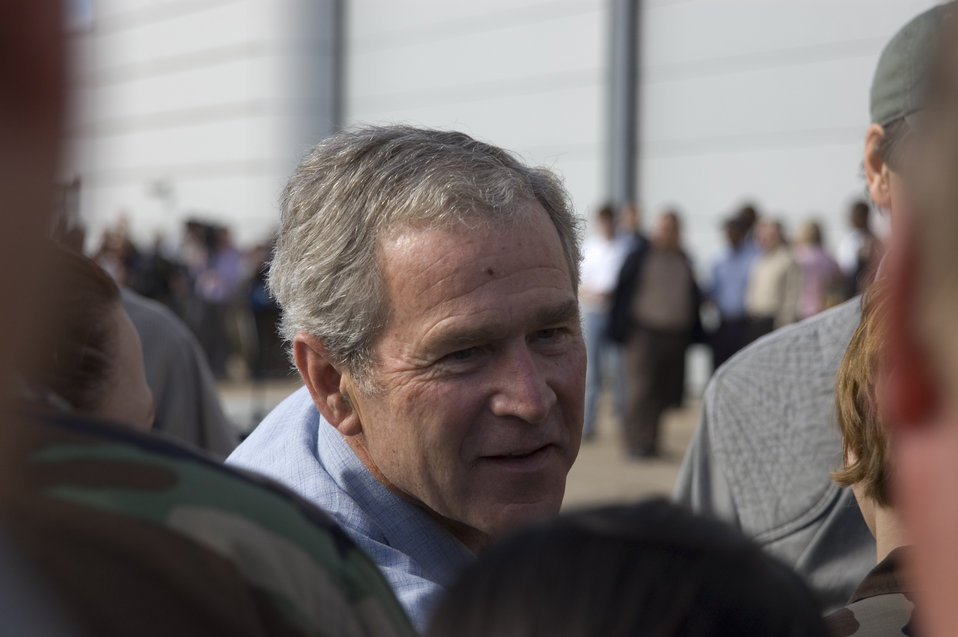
President Bush greets servicemembers supporting Ike relief

President George W. Bush shakes hands with military members Sept. 16 at Ellington Field, Texas, before assessing the damage from Hurricane Ike from the Marine 1 helicopter around the Gulf Coast. Active duty, Reserve and Guard servicemembers are assisting with the relief effort after the storm ravaged the region.